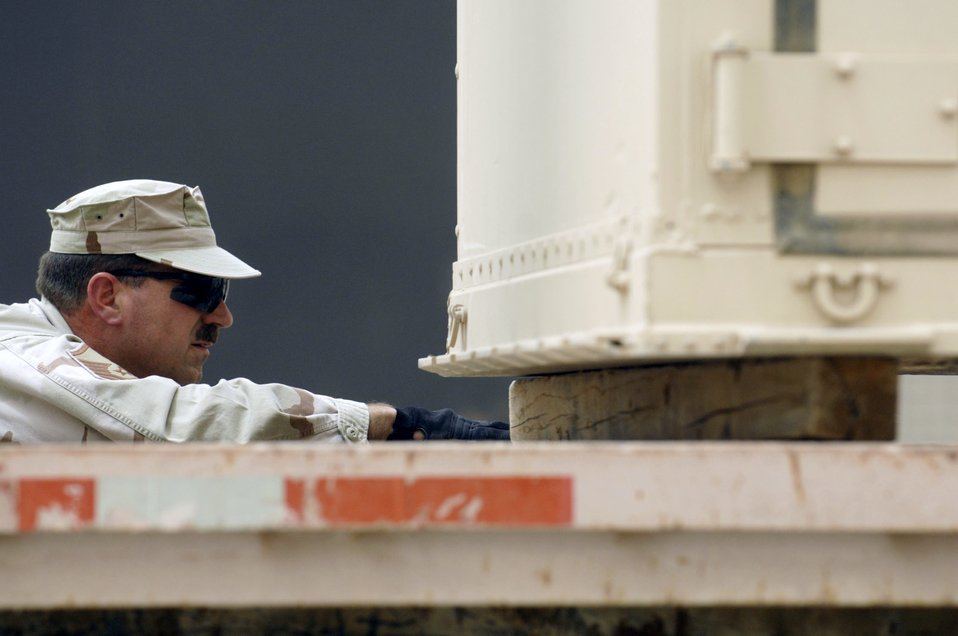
Fully armed

Master Sgt. Steven Anderson checks to ensure a container full of M-16s are sitting correctly on a trailer during a base-wide arming exercise June 14 at Ali Air Base, Iraq. Ali AB Airmen participated in the exercise to help fine-tune weapons distributing procedures in case of a real-world threat to the base. Sergeant Anderson is assigned to the 407th Expeditionary Logistics Readiness Squadron.